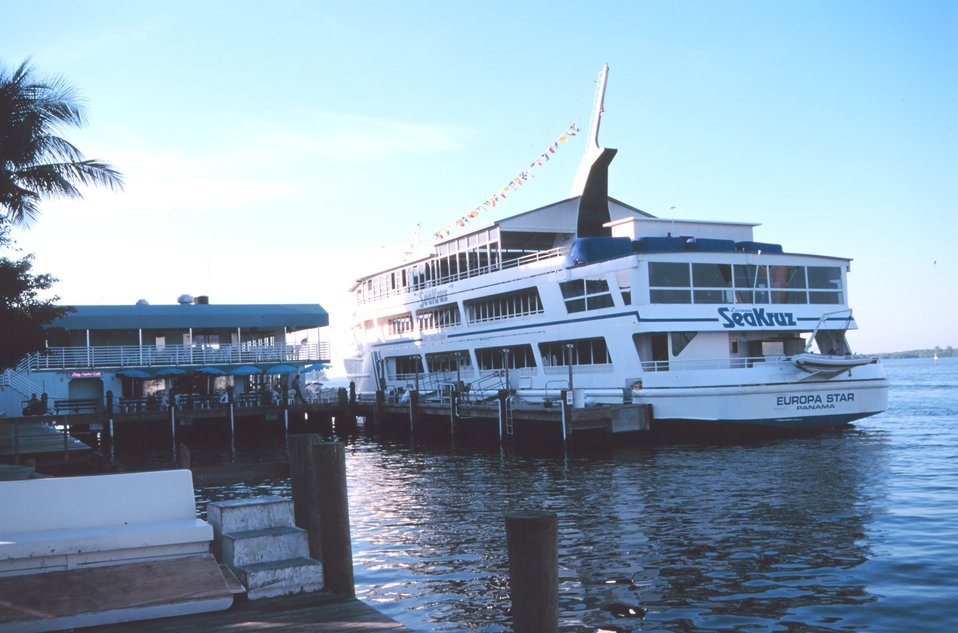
A dining/casino boat that operates out of Snug Harbor